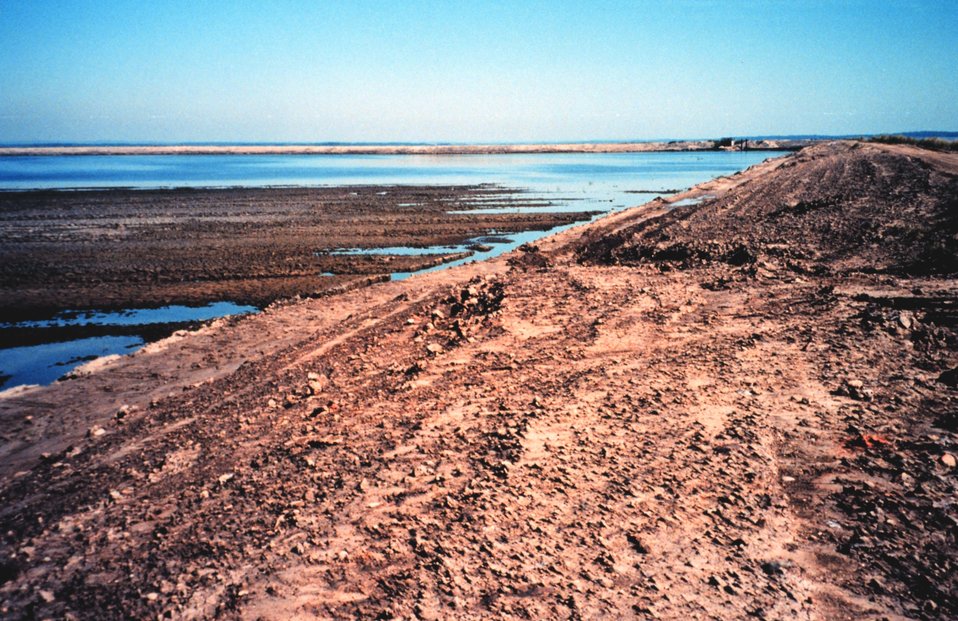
Hart-Miller Island, once two islands that nearly eroded into extinction, are now one. They are being regenerated and enlarged with dredge spoils from Baltimore Harbor.